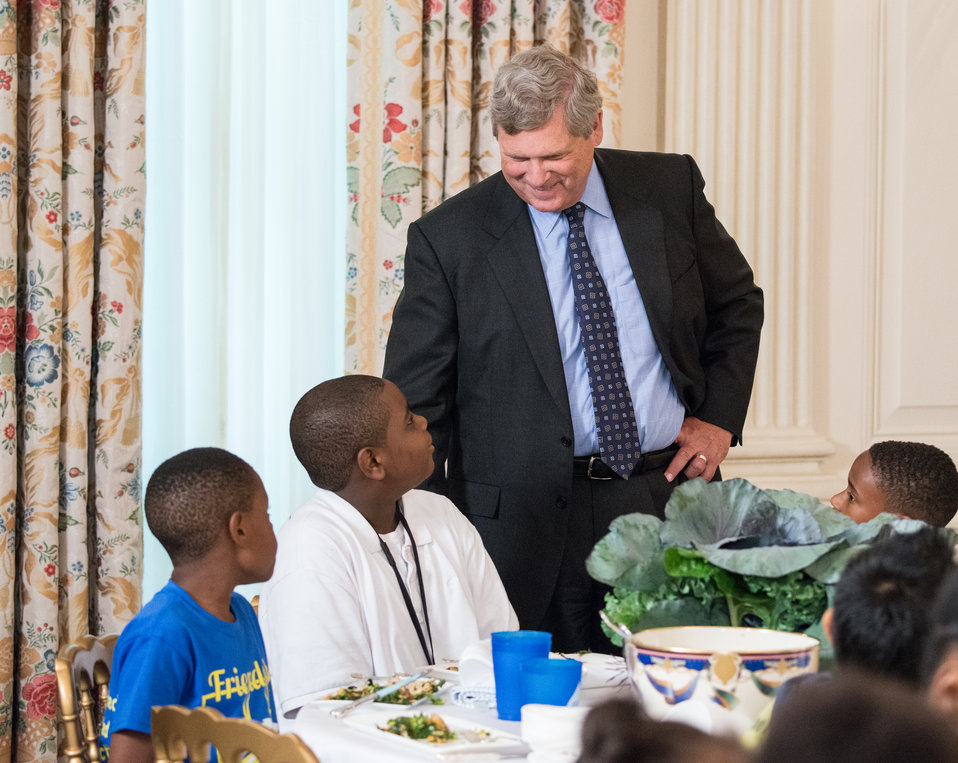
Agriculture Secretary Tom Vilsack speaks to Washington, D.C. students from Cleveland Elementary School, Friendship Public Charter School, Kimball Elementary School, Bancroft Elementary School, and Harriet Tubman Elementary School, who helped plant the garden in the spring make lunch from this year’s summer crop with the help of White House chefs and visiting school nutrition directors from Orlando, FL, Dallas, TX, and West Virginia in the State Dining Room of the White House in Washington, D.C. on Thursday, Jun. 12, 2014.